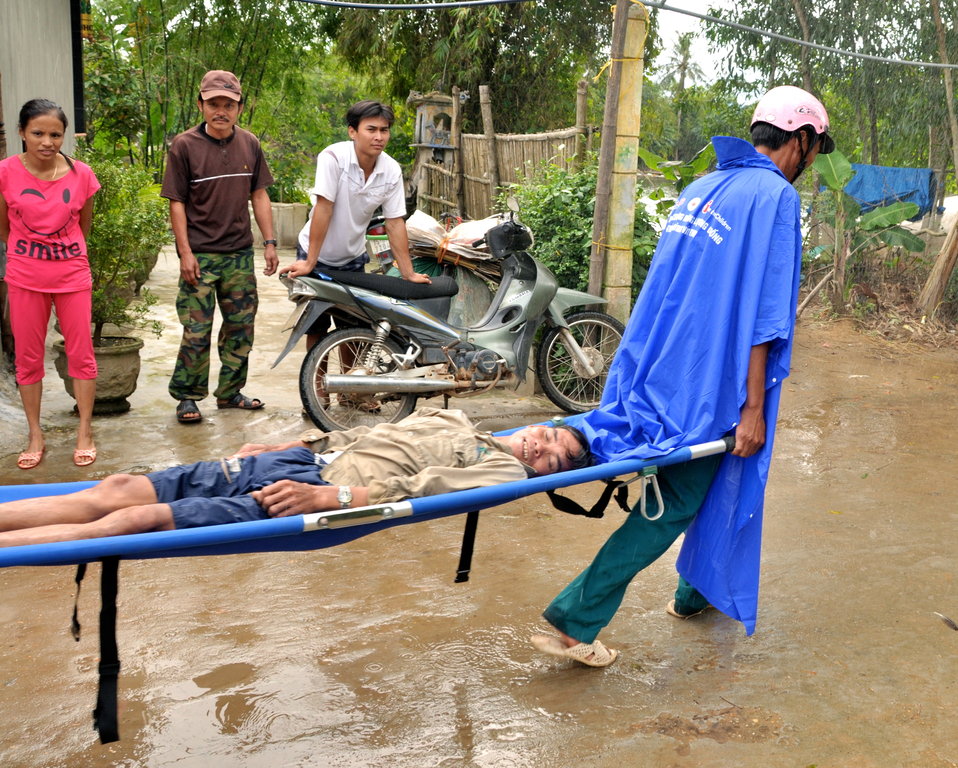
USAID and Save the Children support community evacuation drill and emergency preparedness in central Vietnam

Loc An Commune, Phu Loc District, Thua Thien Hue Province
December 4, 2012, Photo: Richard Nyberg, @USAIDVietnam